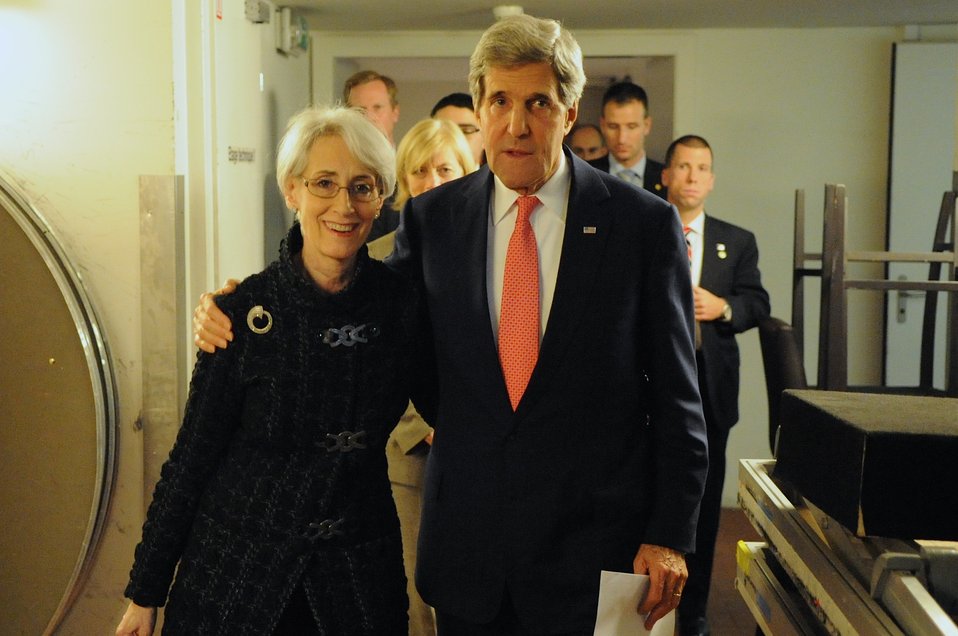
Secretary Kerry Embraces Under Secretary Sherman After P5 1 Members Conclude Nuclear Deal With Iran

U.S. Secretary of State John Kerry embraces Under Secretary of State for Political Affairs Wendy Sherman after the P5 1 member nations concluded a nuclear deal with Iran in Geneva, Switzerland, on November 24, 2013.